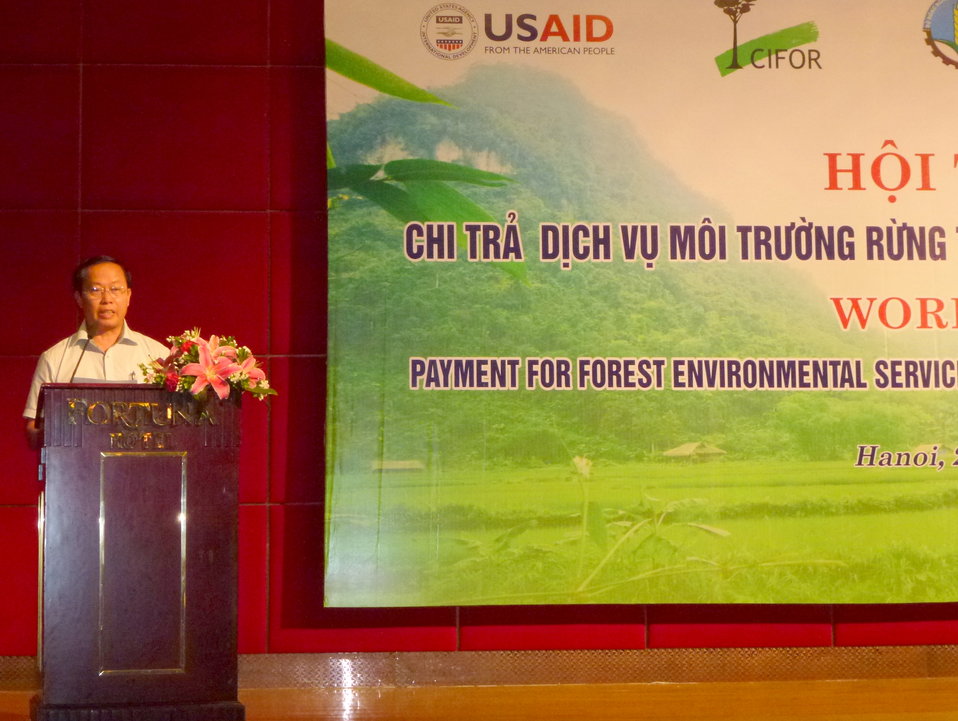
Payment for Forest Environmental Services Workshop

Nguyen Ba Ngai, PhD, Deputy Director General of the Vietnam Administration of ForestryHanoi, August 20, 2013